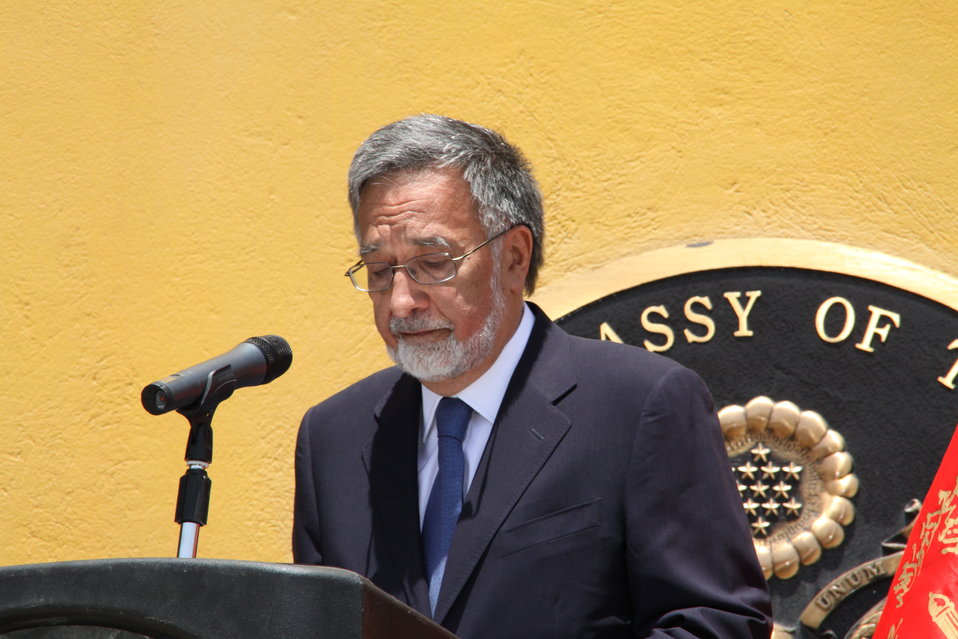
Kabul Official July 4th Celebration